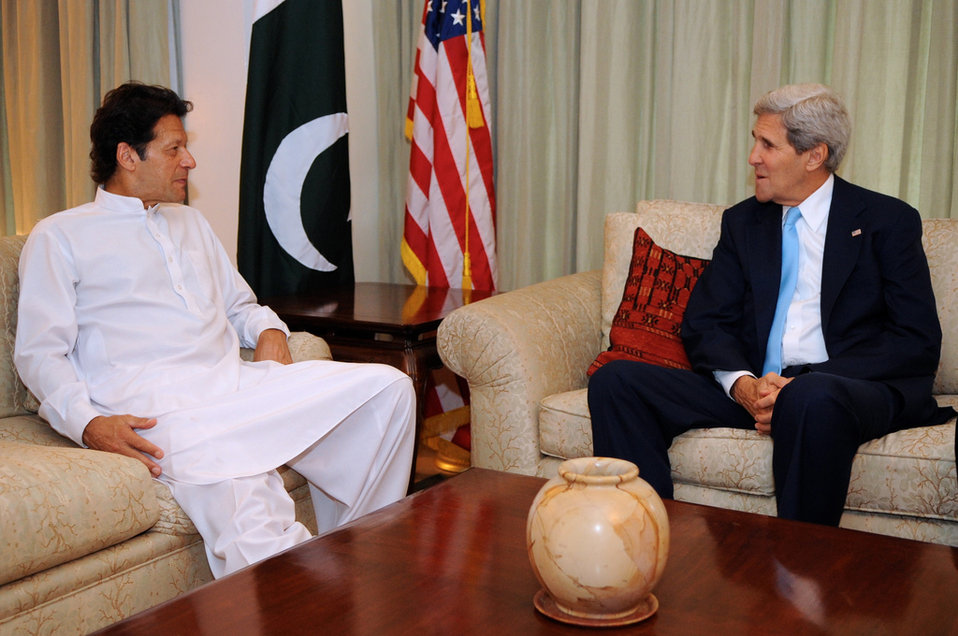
Secretary Kerry Meets With Pakistani Party President Imran Khan

U.S. Secretary of State John Kerry meets with Pakistan Tehreek-i-Insaf Party President Imran Khan during a visit to Islamabad, Pakistan, on August 1, 2013.